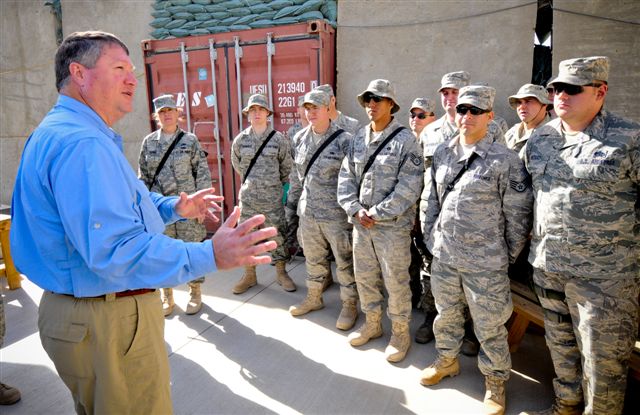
Secretary Donley visits Bagram Airmen

Secretary of the Air Force Michael B. Donley visits with Airmen from the newly-created 455th Expeditionary Communications Squadron Oct. 15 at Bagram Airfield, Afghanistan. He took the opportunity to learn about the functions of the squadron and its role in the war on terrorism.